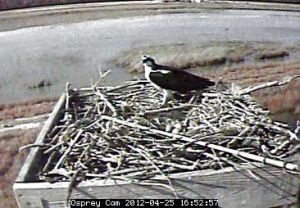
Osprey cam at Blackwater 2

An osprey on a nest at Blackwater National Wildlife Refuge in Maryland as seen through a webcam.